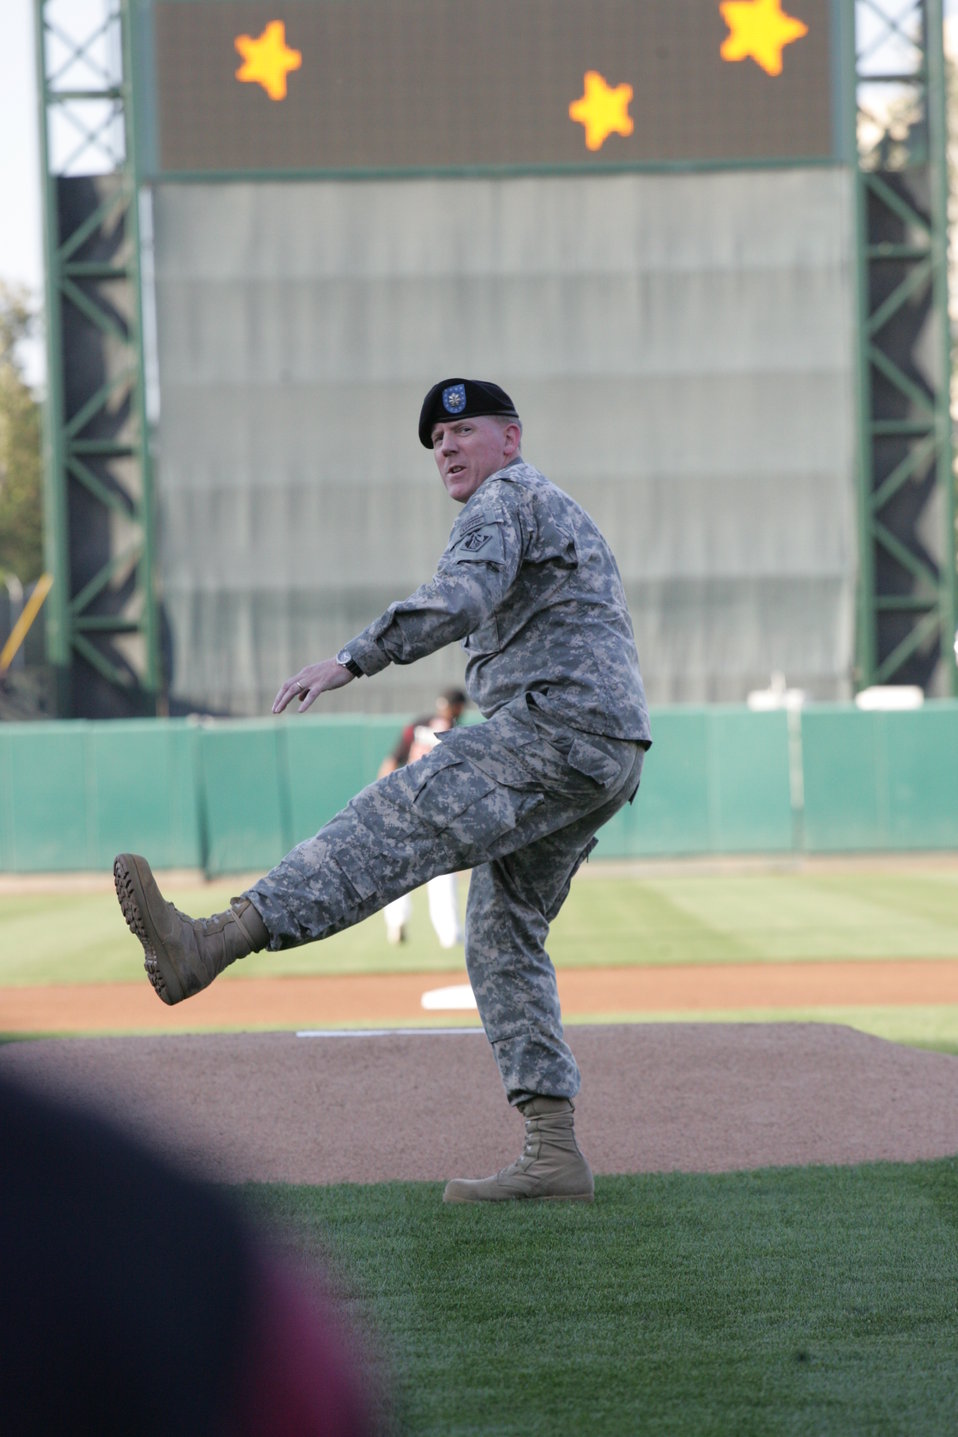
First pitch at the River Cats game for Army birthday

U.S. Army Corps of Engineers Sacramento District deputy commander, Lt. Col. Andrew Kiger, throws out the first pitch before a Sacramento River Cats baseball game June 1, 2011 in West Sacramento, Calif., to celebrate the U.S. Army’s 236th birthday. A Sacramento District park ranger and water safety mascot Bobber the Water Safety Dog were also on hand to share water safety tips with River Cats fans. (U.S. Army Photo/Michael J. Nevins)
*Watch Lt. Col. Kiger throw out the first pitch! on.fb.me/ljgsB2